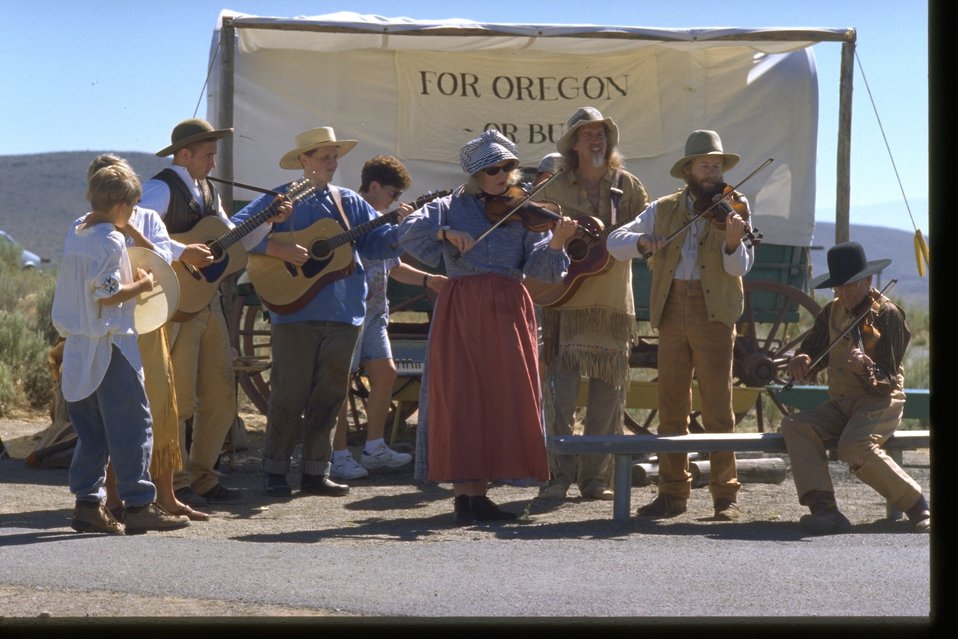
Musicians at the Pioneer Festival outside of the NHOTIC.